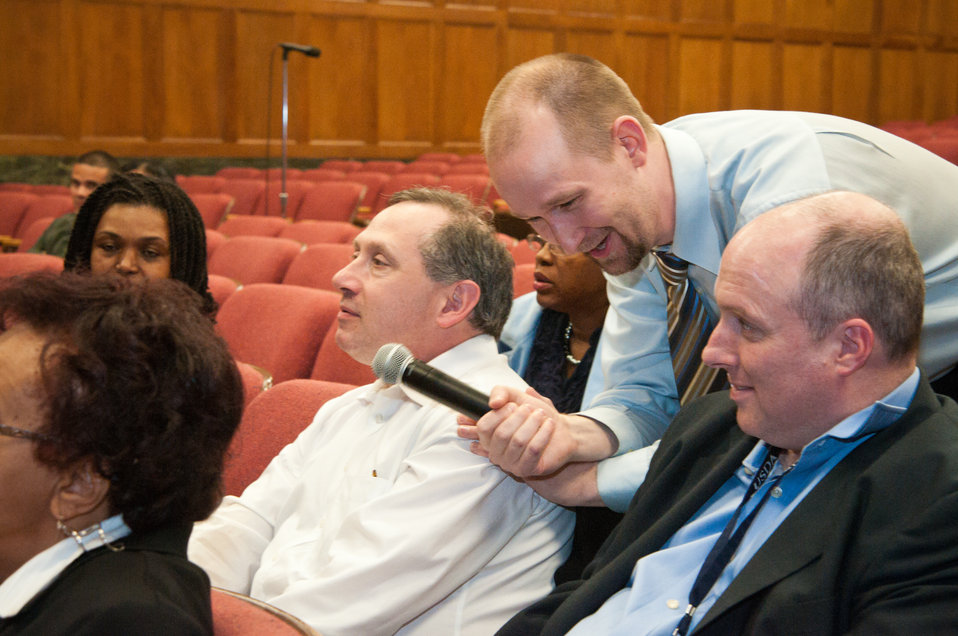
Office of Personnel Management (OPM) Diversity and Inclusion Program Manager Michael Murray asks a question of U.S. Department of Agriculture (USDA) Agricultural Marketing Service (AMS) Disability Employment Program Manager Todd Birkenruth (left) and USDA Animal and Plant Health Inspection Service (APHIS) Reasonable Accommodation Specialist Dave Walton (right) about disability diversity and inclusion in the workforce during USDA’s Office of Human Resources Management (OHRM) Disability Employment Program Team Training at USDA in Washington, D.C. on Tuesday, May 14, 2013.